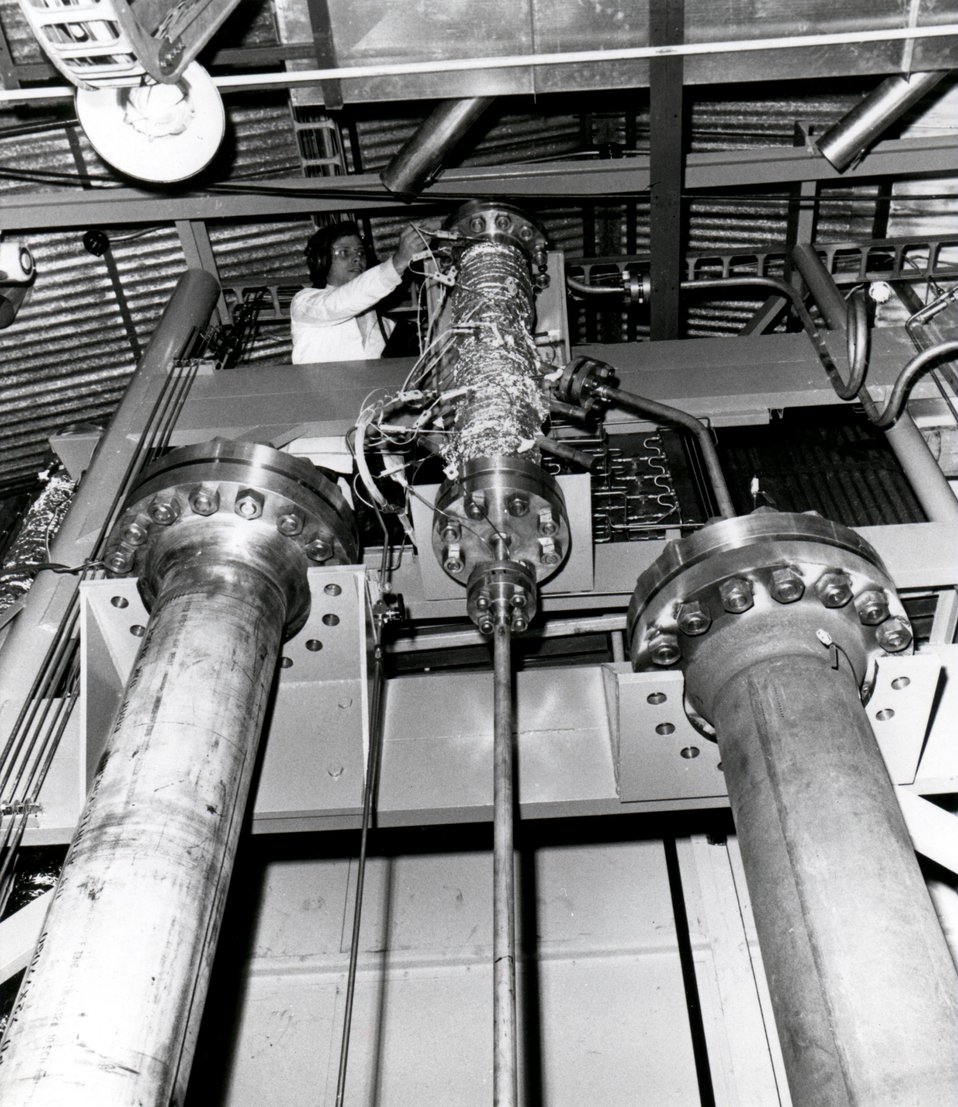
The Energy Research and Development Administration's Oak Ridge National Laboratory is involved in both process development and engineering evaluation of several coal-conversion processes for producing synthetic crude-oil from coal. Circa 1975.